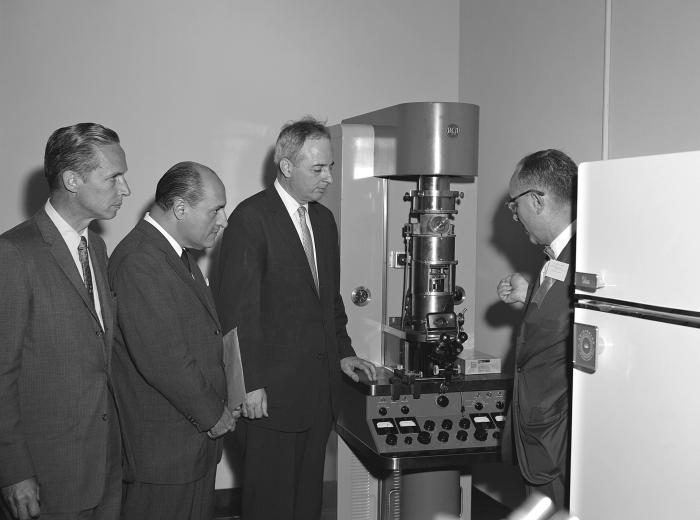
This 1960 historic photograph depicted a Centers for Disease Control (CDC) Dedication Ceremony taking place, celebrating the installation of a new electron microscope in a laboratory setting. Standing left to right, attendees of the ceremony included Dr. Barney, Dr. Kavclau, Dr. Flemming, and Dr. Cooper.